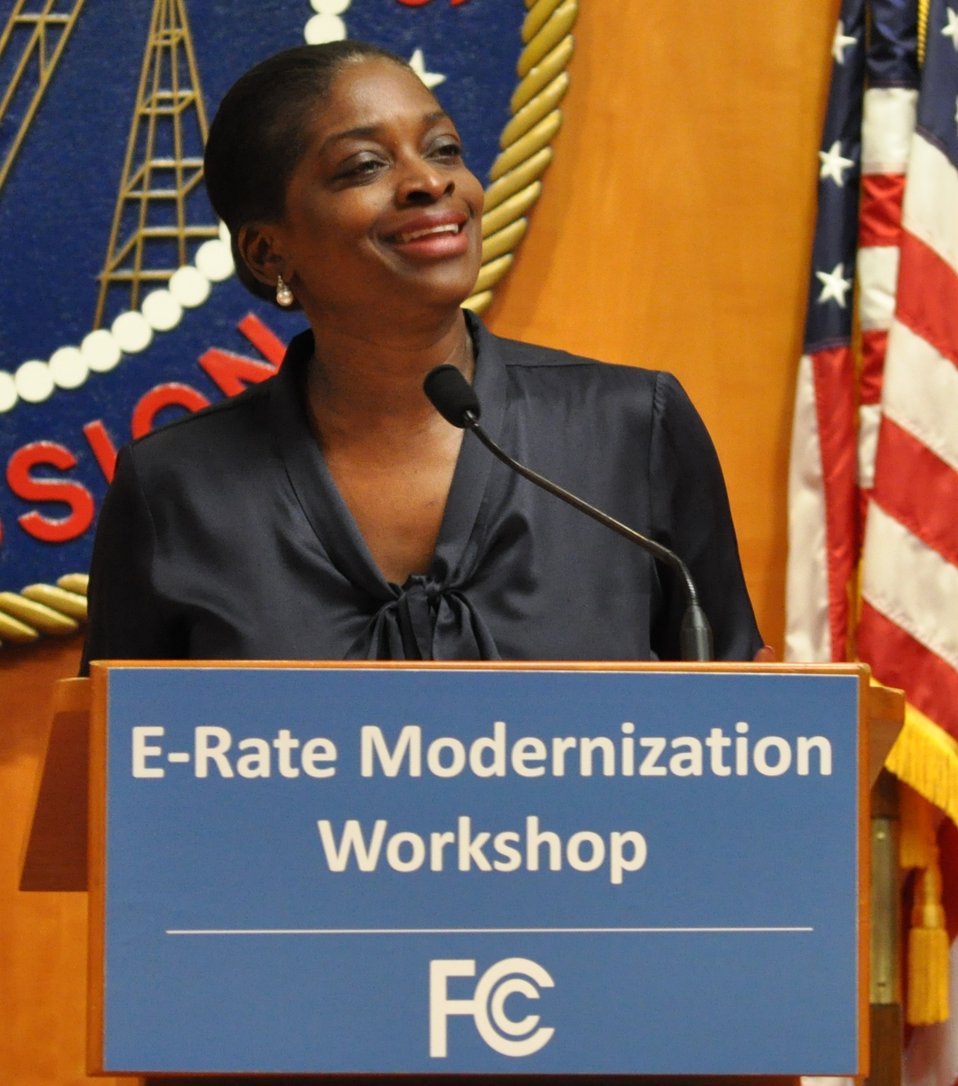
5.6.2014 E-Rate Modernization Workshop

Concluding Remarks from Commissioner Mignon Clyburn